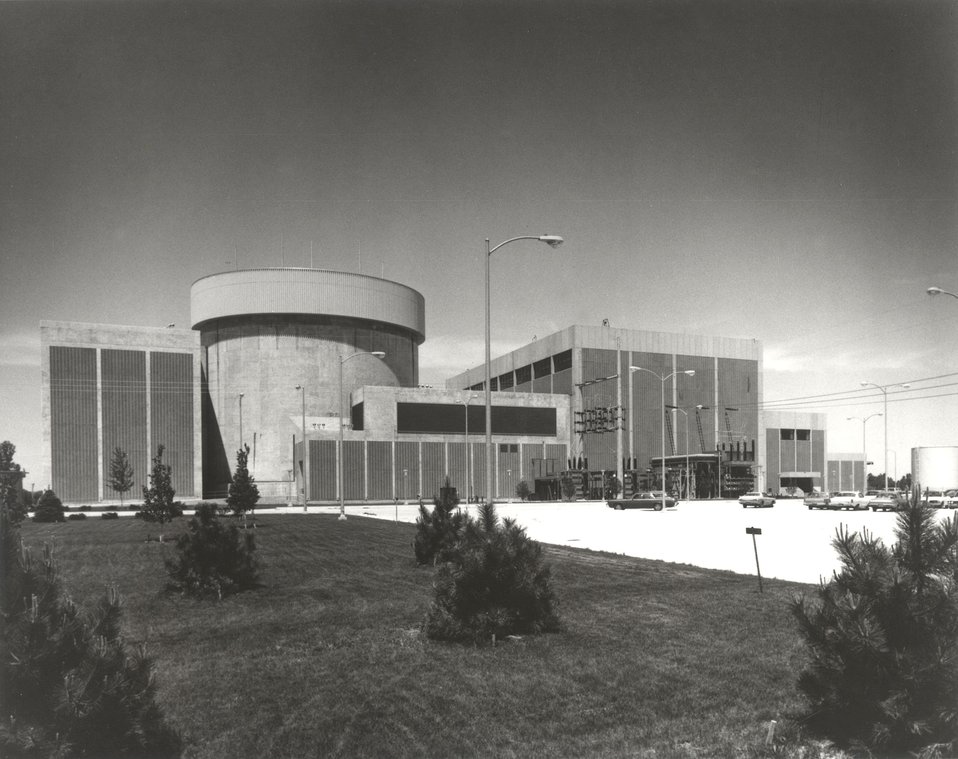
The Omaha Public Power District Fort Calhoun Nuclear Power Station located at Fort Calhoun, Nebraska. Circa 1974.